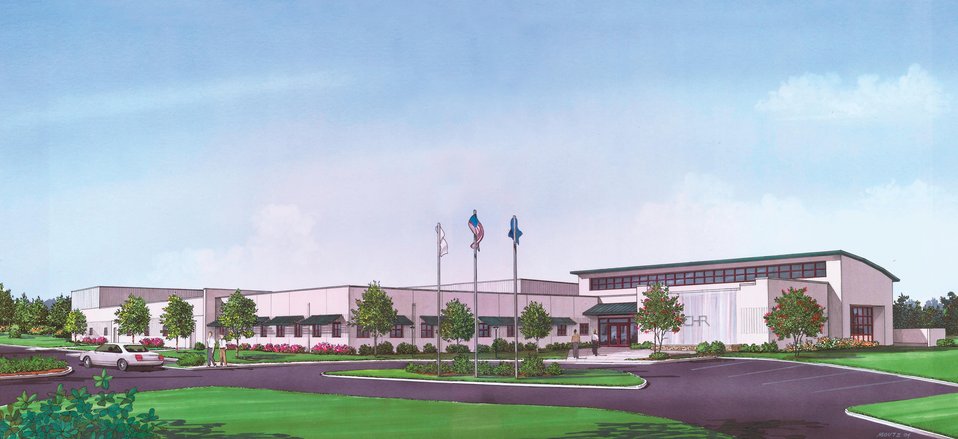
ARTIST'S CONCEPT OF THE SAVANNAH RIVER NATIONAL LABORATORY'S NEW CENTER FOR HYDROGEN RESEARCH.

SRNL'S CENTER FOR HYDROGEN RESEARCH WILL PROVIDE WORLD CLASS LABORATORIES FOR THE WORK BEING PERFORMED BY THE LABORATORY'S RESEARCHERS, WHILE ACTING AS A CATALYST TO DRAW UNIVERSITIES AND INDUSTRIES CONDUCTING HYDROGEN RESEARCH. THIS RESEARCH WILL BE AT THE FOREFRONT AS AMERICA PREPARES TO MOVE TOWARD THE USE TO HYDROGEN AS A SIGNIFICANT ENERGY SOURCE FOR OUR CARS, HOMES AND INDUSTRIES.